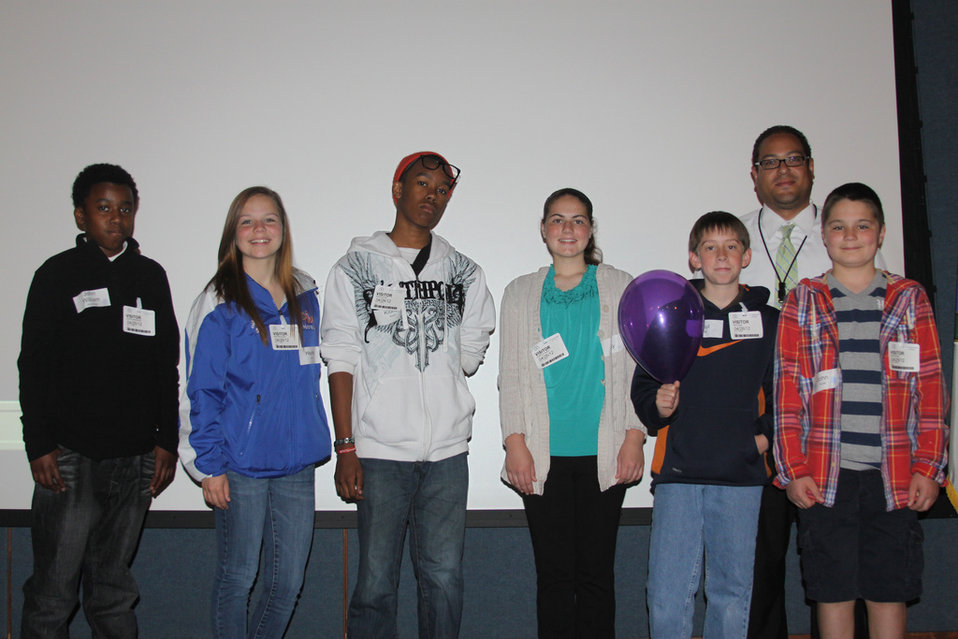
Dan's Group